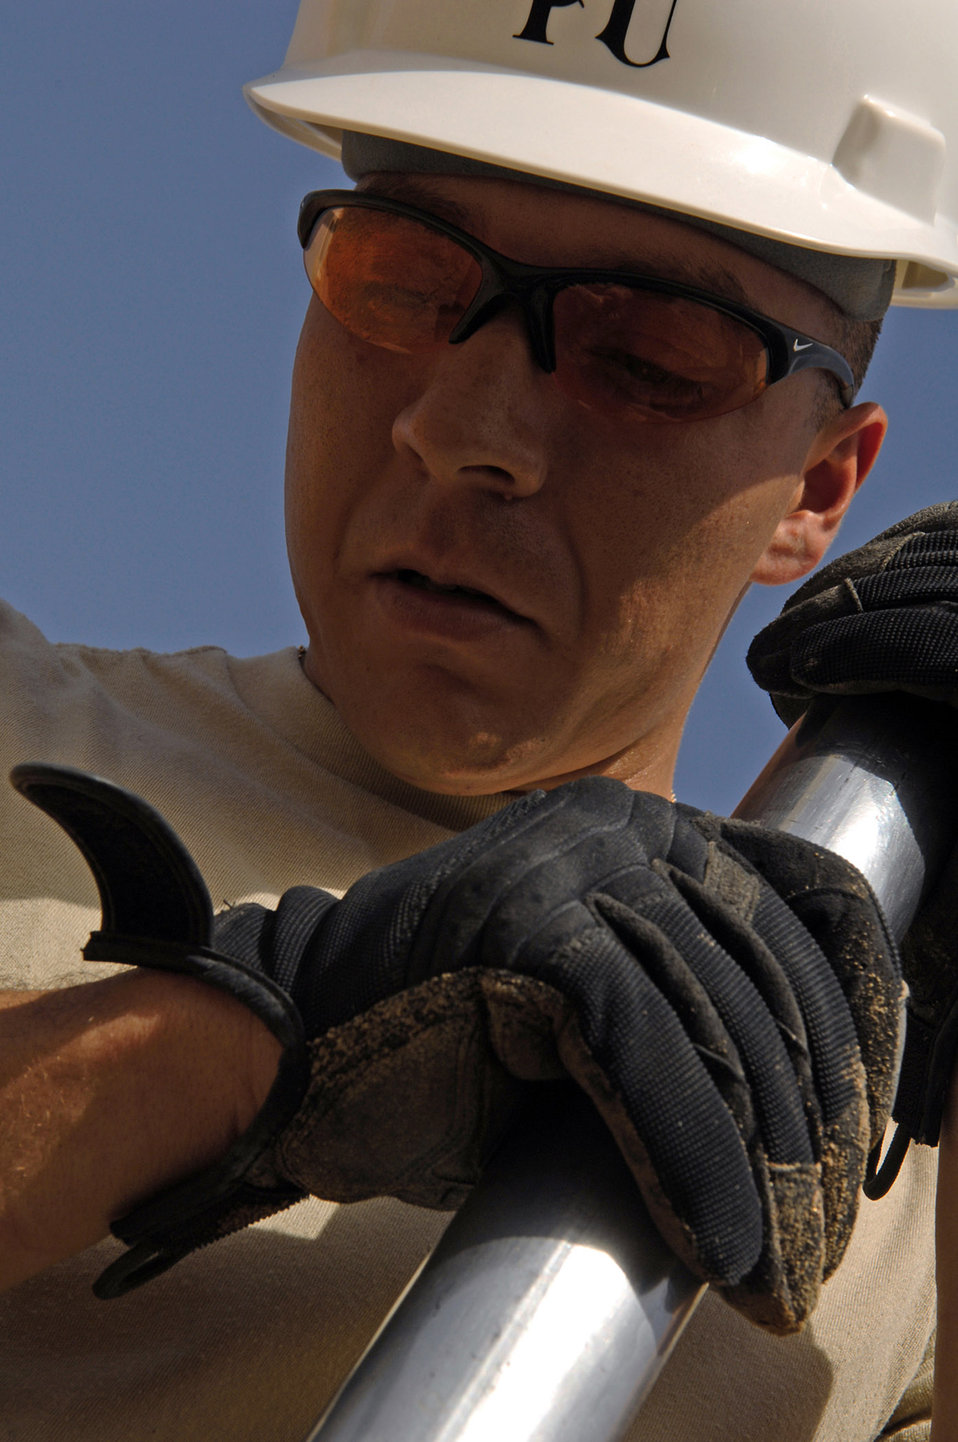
Water engineering

Staff Sgt. Steven Lucero compacts sand around water pipes to provide protection from rocks March 24 at Balad Air Base, Iraq. Base plumbers are in the midst of a pipe infrastructure replacement project involving removal of old pipes and replacing them with newer, thicker gauge pipes that will stabilize the systems. Sergeant Lucero is a 332nd Civil Engineer Squadron plumber deployed from Ellsworth Air Force Base, S.D.